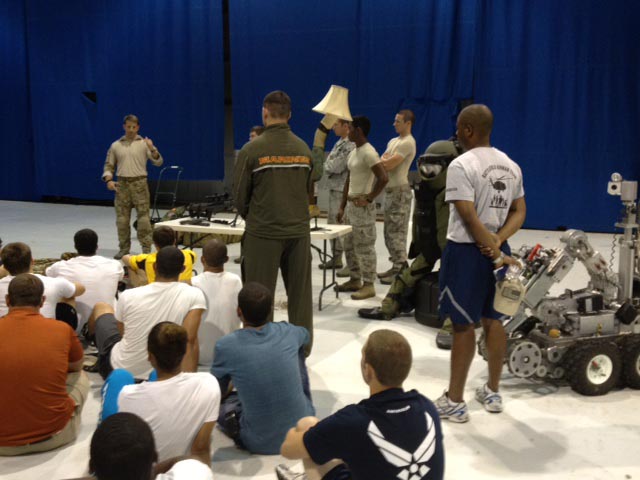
Special Operations Tryouts

An Air Force Pararescue Jumper conducts an orientation with applicants.